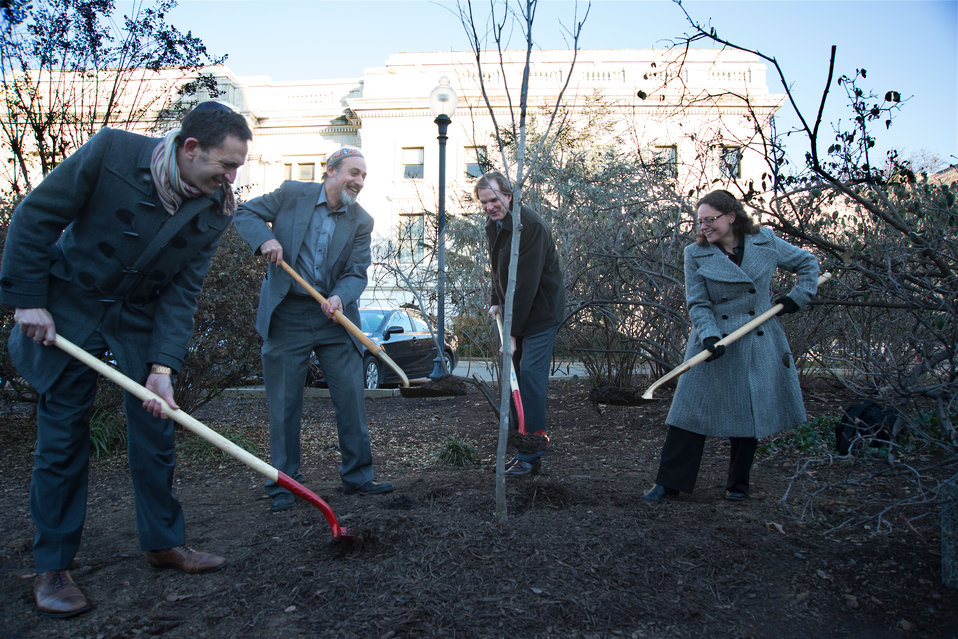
Dignitaries from the White House and the U.S. Department of Agriculture (USDA) plant a Redbud tree on the west lawn of USDA to commemorate Tu B’Shevat, the Jewish New Year of the Tree, on Thursday, Jan. 16, 2014. (L to R The White House Associate Director for Outreach Matt Nosanchuk, Adat Shalom Reconstructionist Synagogue Rabbi Fred Scherlinder Dobb, U.S. Department of Agriculture (USDA) Under Secretary Natural Resources and Environment (NRE) Robert Bonnie, USDA NRE Chief of Staff Meryl Harrell).